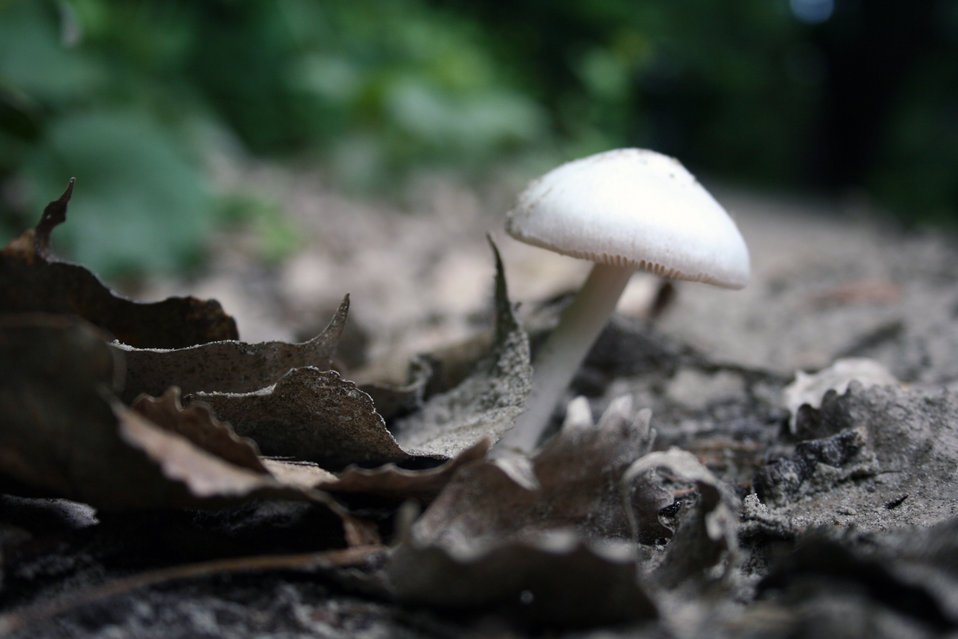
Mushroom